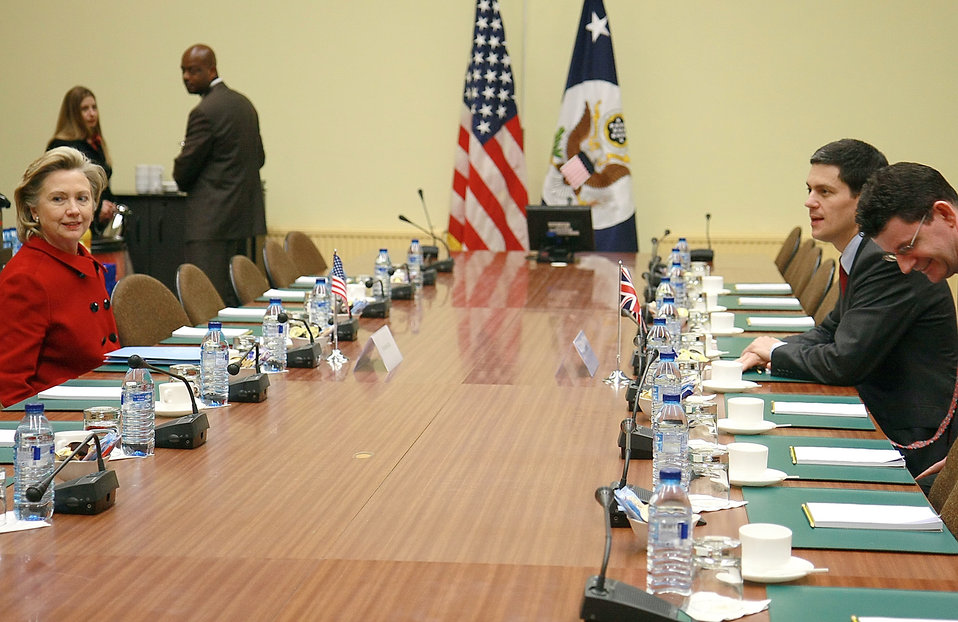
Secretary Clinton Meets With U.K. Foreign Minister

U.S. Secretary of State Hillary Rodham Clinton holds a bilateral meeting with U.K. Secretary of State for Foreign and Commonwealth Affairs David Miliband in Brussels, Belgium December 4, 2009.